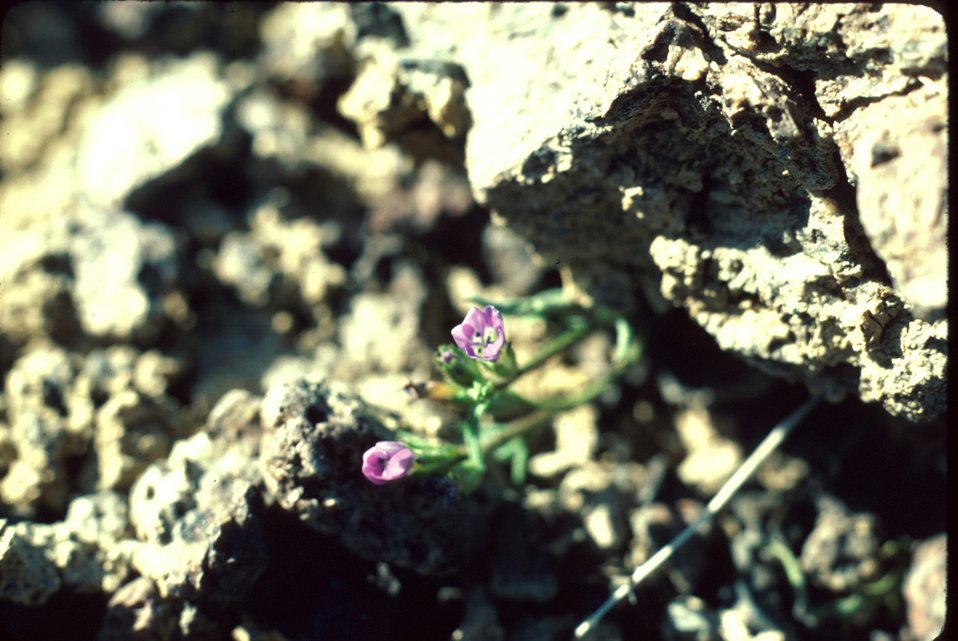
Gilia leptomeria Wildflower